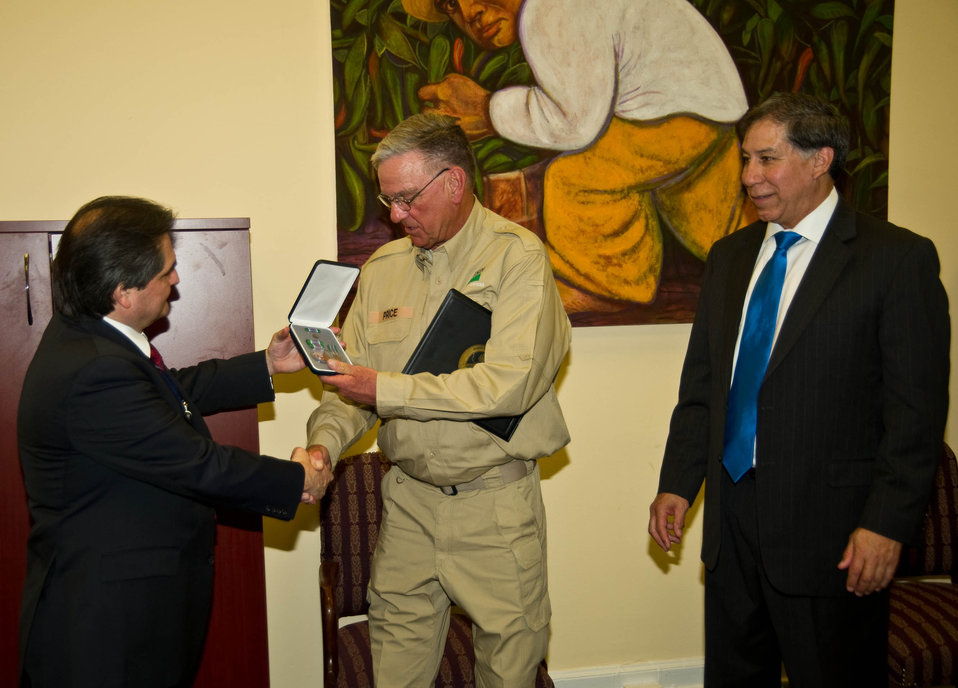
U.S. Department of Agriculture (USDA) Animal and Plant Health Inspection Service (APHIS) Acting Associate Administrator Peter Fernandez (left) and Agriculture Under Secretary for Marketing and Regulatory Programs (MRP) Edward Avalos present (right) the USAF Award for Exemplary Civilian Service to USDA APHIS Wildlife Service Biologist New Mexico district supervisor Keel Price for his work in Afghanistan on Tuesday, Mar. 19, 2013.